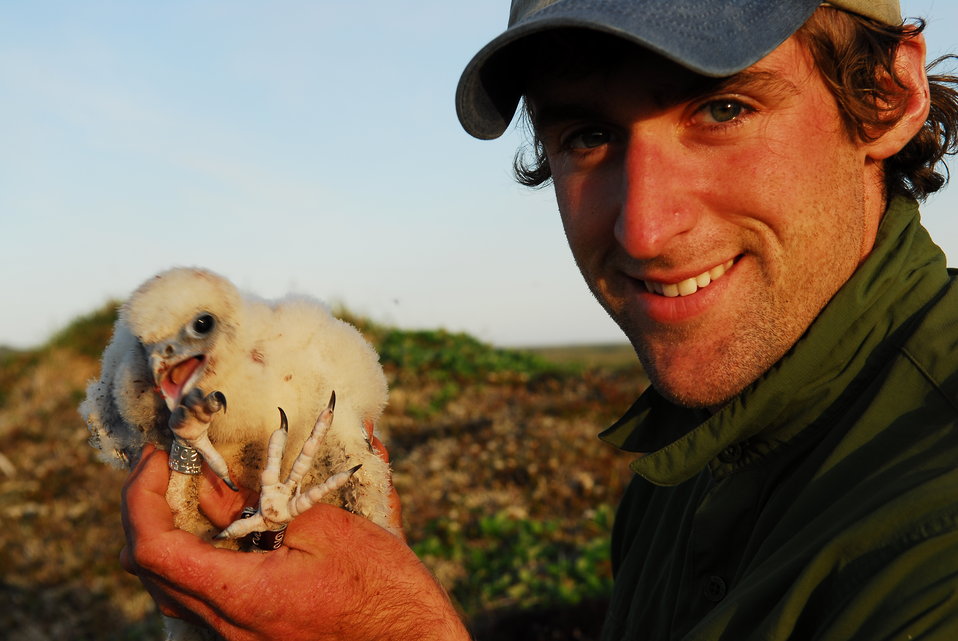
Banded Gyrfalcon nestling

In 2004 a multi-year research project was initiated investigating Gyrfalcons within the YDNWR.
Researchers banded and collected genetic samples from each nestling that was encountered.

USFWS Yukon Delta NWR